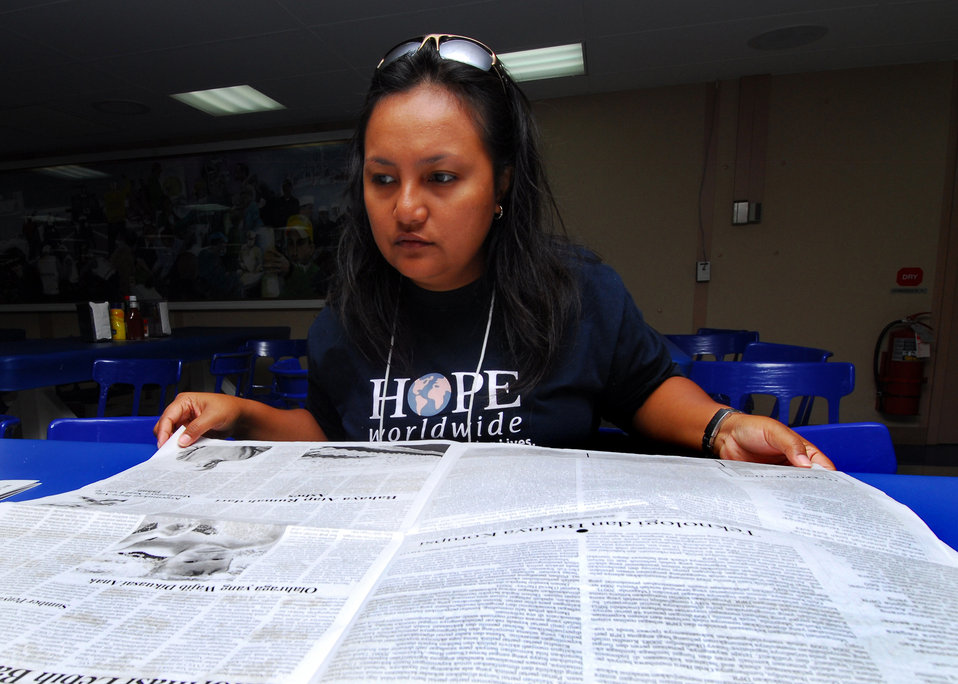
HOPE Worldwide Member Yuniwardani Translates an Indonesian Newspaper

Endah Yuniwardani, a HOPE worldwide member translates an Indonesian newspaper during the Military Sealift Command hospital ship USNS Mercy’s (T-AH 19) transition through Indonesia on July 25, 2010. Mercy is in the North Maluku Islands conducting Pacific Partnership 2010, the fifth in a series of annual U.S. Pacific Fleet endeavors conducted in Indonesia as a disaster relief exercise aimed at strengthening regional partnerships.